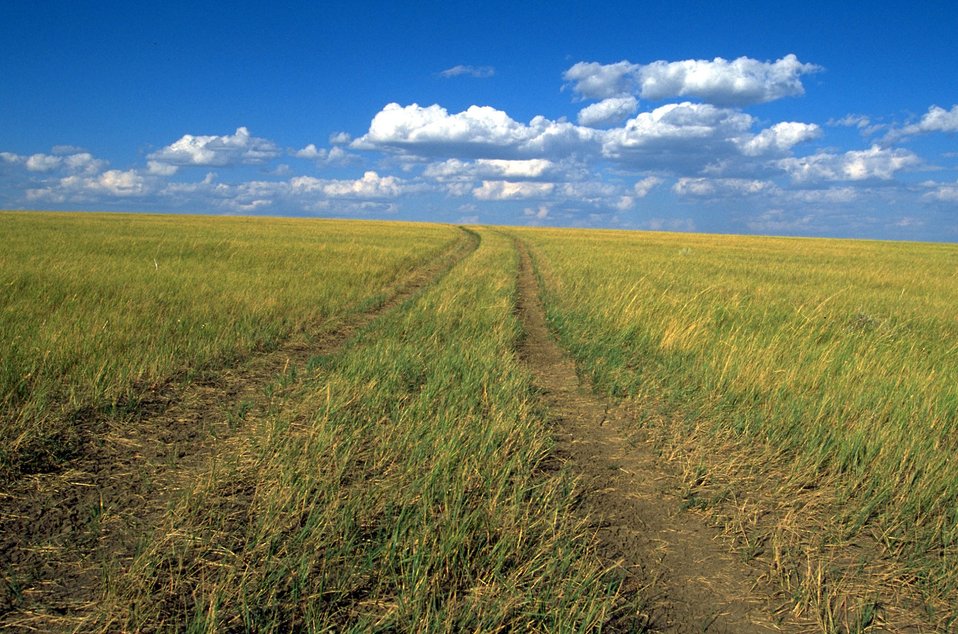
OHV Trail across grassland 40 miles north of Belle Fourche